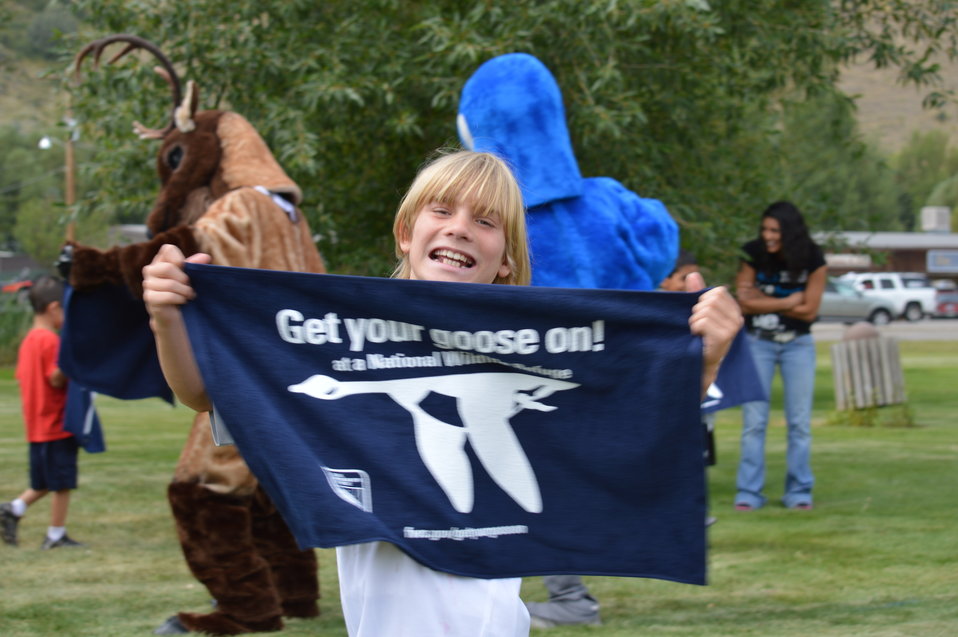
Get Your Goose On! - National Elk Refuge Style

On August 10, 2012 the U.S. Fish and Wildlife Service and Partners celebrated the 100 year anniversary of the establishment of the National Elk Refuge. In these photos, young attendees, along with Puddles the Blue Goose and the National Elk Refuge's mascot, showed us how to Get Your Goose On! with style.